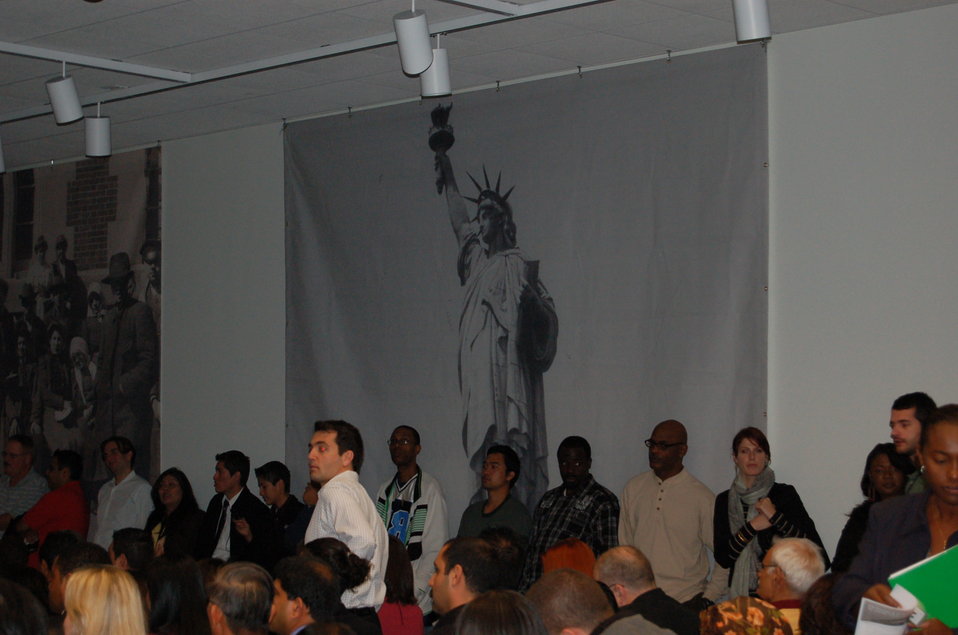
Naturalization Ceremony